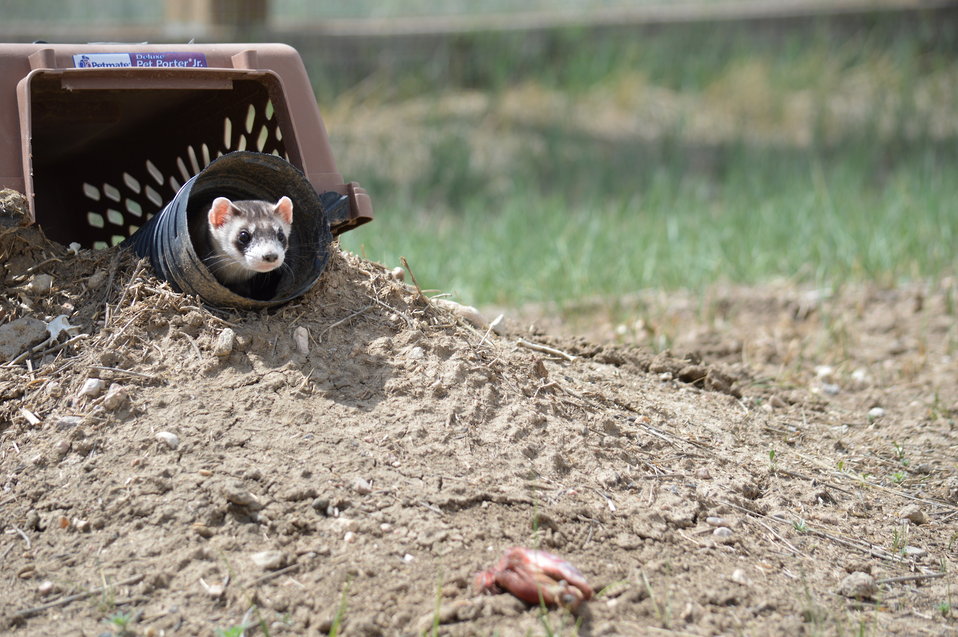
Interns visit the NBFFCC

In the summer of 2012, USFWS Region 6 interns visited the National Black-footed Ferret Conservation Center (NBFFCC) in Colorado to learn how the program reintroduces the endangered Black-footed ferret back into its native habitat.